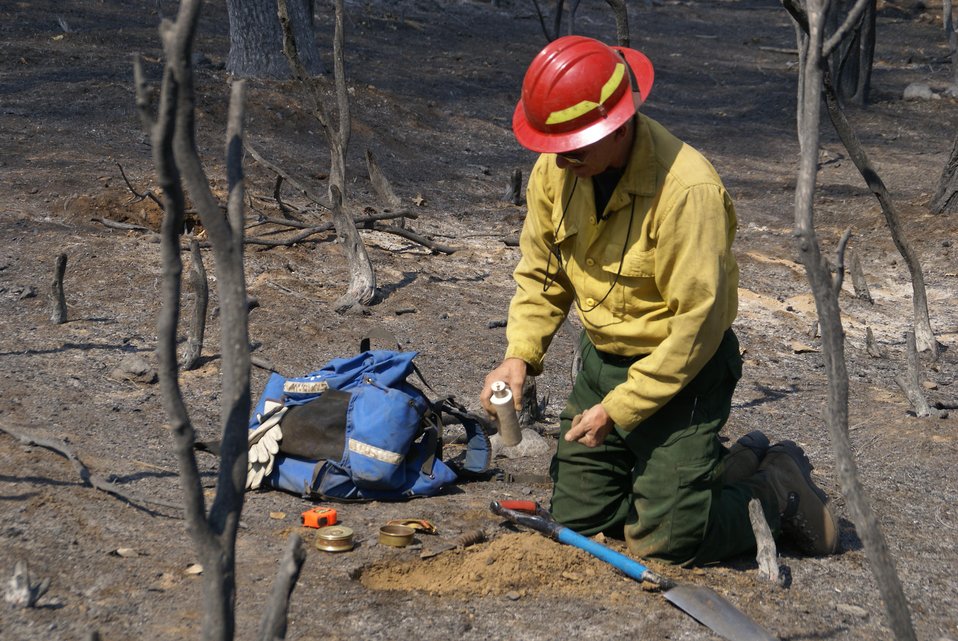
Burned Area Emergency Response (BAER) Brad Rust evaluates the soil on the Rim Fire. BAER teams start work even before the fire is completely extinguished at the Rim Fire. BAER is a rapid assessment of burned watersheds by a BAER team to identify imminent post-wildfire threats to human life and safety property and critical natural or cultural resources on National Forest System lands and take immediate actions to implement emergency stabilization measures before the first major storms. Fires result in loss of vegetation exposure of soil to erosion and increased water runoff that may lead to flooding increased sediment debris flows and damage to critical natural and cultural resources. BAER team members implement seeding and mulching installation to prevent erosion, erect temporary water run-off control structures that will protect recovering areas, and installation of warning signs, replace safety related facilities, remove safety hazards, prevent permanent loss of habitat for threatened and endangered species, and prevent the spread of noxious weeds and protect critical cultural resources. The Rim Fire in the Stanislaus National Forest near in California began on Aug. 17, 2013 and is under investigation. The fire has consumed approximately 256,169 acres and is 84% contained.